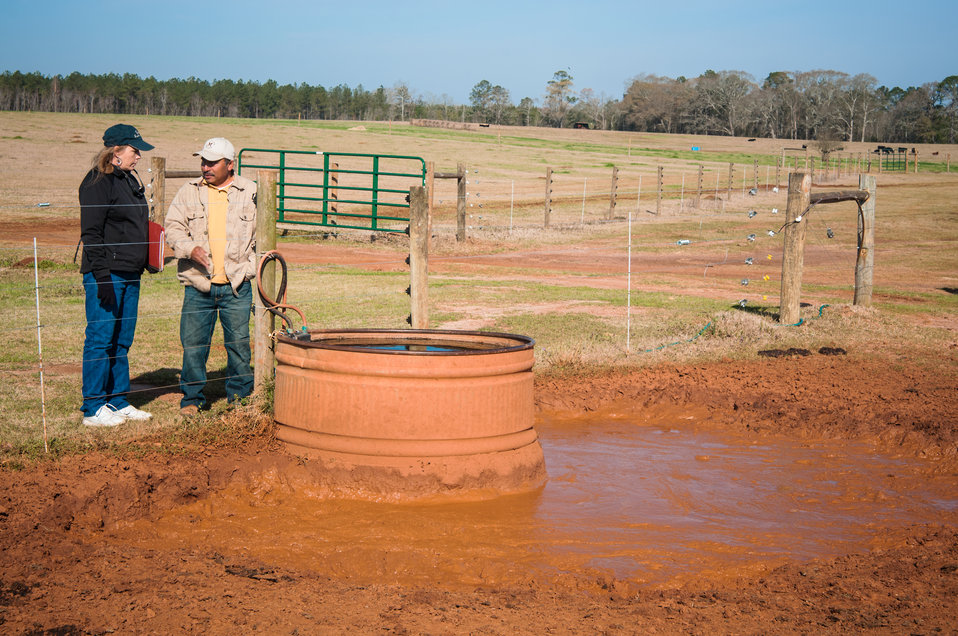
U.S. Department of Agriculture (USDA) National Resources Conservation Service (NRCS) Soil Conservation Technician Lynne Roney and Banamacc Farms owner Raul Moreno examine a heavy use area around a watering trough in his pasture in Edison, Calhoun County, GA on Mar. 7, 2013. Moreno's conservation plan calls for cross fencing and concrete pads around watering troughs. Moreno was able to secure funding for the improvements with a USDA NRCS Environmental Quality Incentive Program (EQIP) contract. Moreno mentioned, “NRCS provided me with specifications and designs that assisted me in installing conservation practices that will last for many years to come.” The USDA Strike Force Initiative has designated Calhoun County, GA as a Strike Force county selected to receive assistance to relieve persistent poverty in historically high-poverty counties.